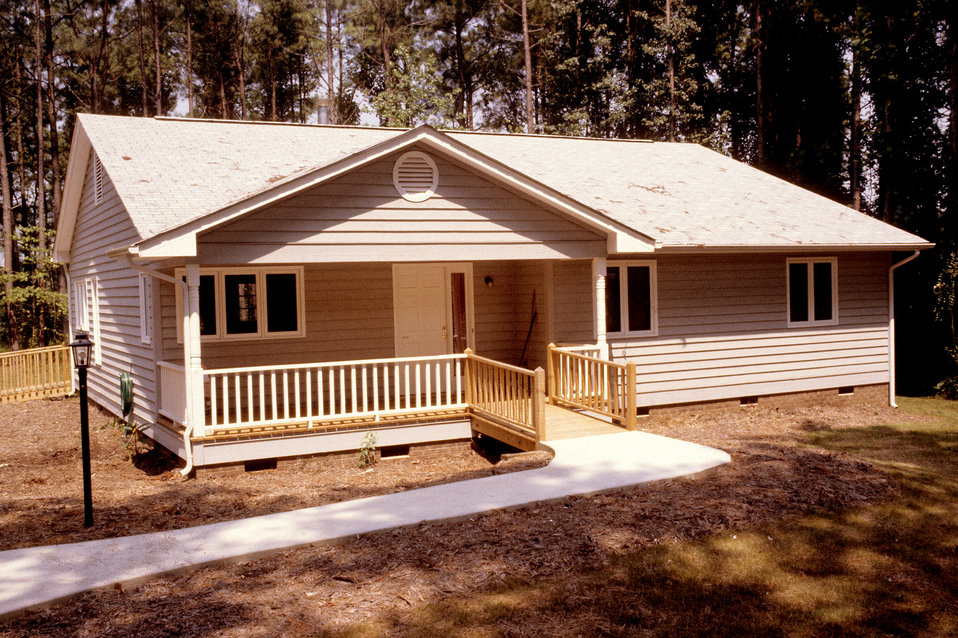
This is one of six images, (PHIL# 9155 - 9160), depicting the exterior of a small, wood frame, clapboard, single story house with a smooth, concrete pathway to the front porch. The porch was roofed, and was level with the first floor of the house. The pathway to the front door crossed a small, railed bridge in order to establish and maintain the proper drainage swale along the front of the house. A retaining wall supported the earth berm upon which the pathway sat. The projection of a small ramp could be seen, on the left, at the rear of the house. The front door has a full-height sidelight window. This type of stepless, universal entrance avoided the construction, slopes, and maintenance issues of ramped entrances, thereby, avoiding the unattractive and stigmatizing appearance of most ramps.